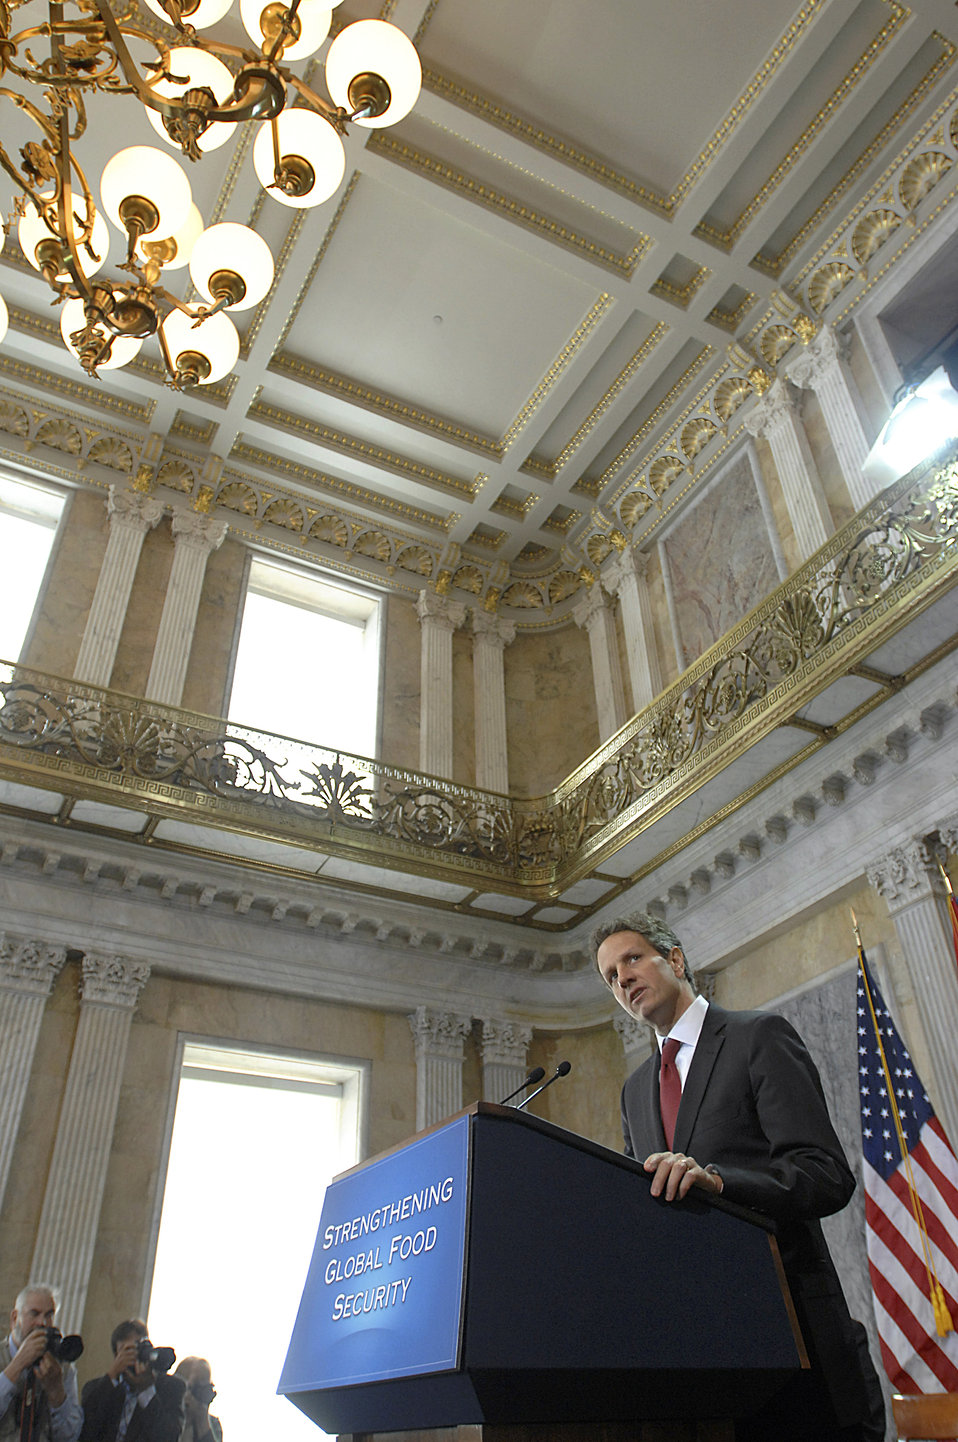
Announcement on International Commitment to Fight Global Hunger and Poverty, 4/22/10

Treasury Secretary Geithner speaks at announcement of a new international commitment to fight global hunger and poverty at Treasury Department April 22, 2010.